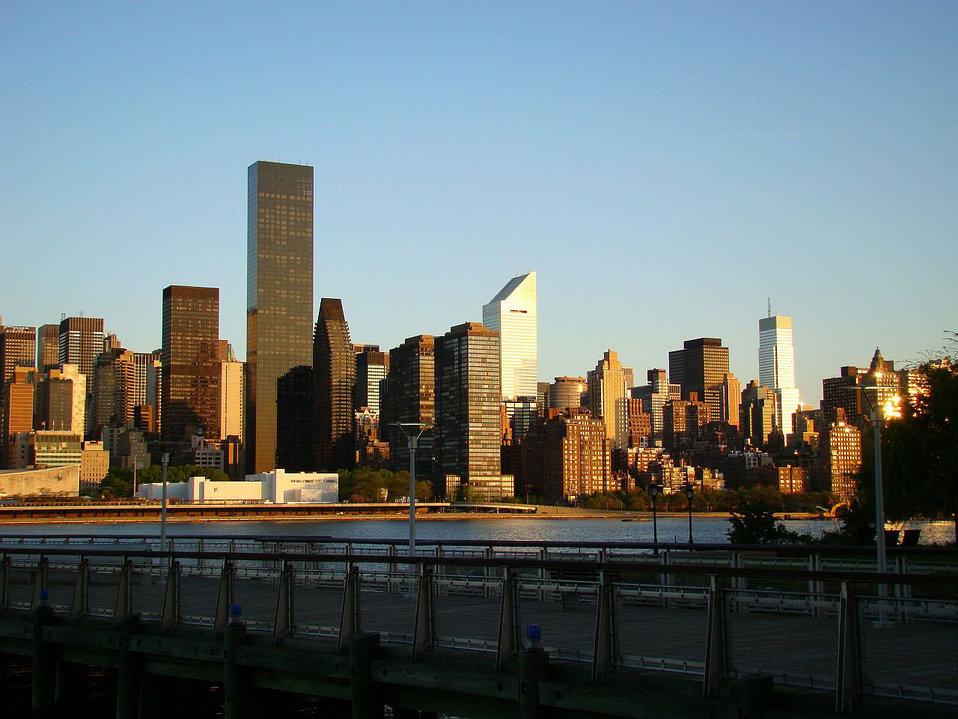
Sunrise in the city

East side of manhattan at sunrise.